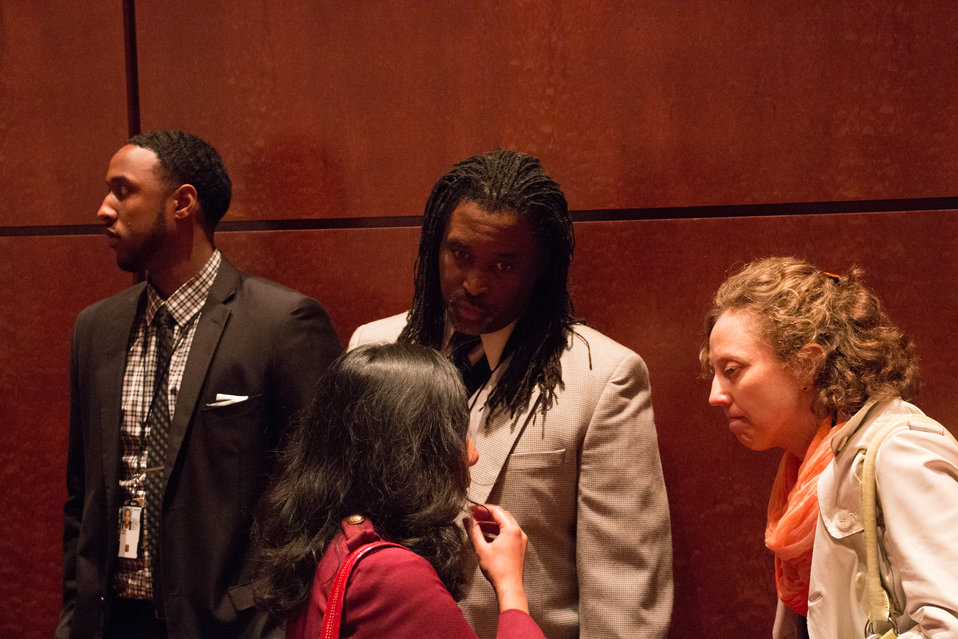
VHAP Launch (398 of 511)